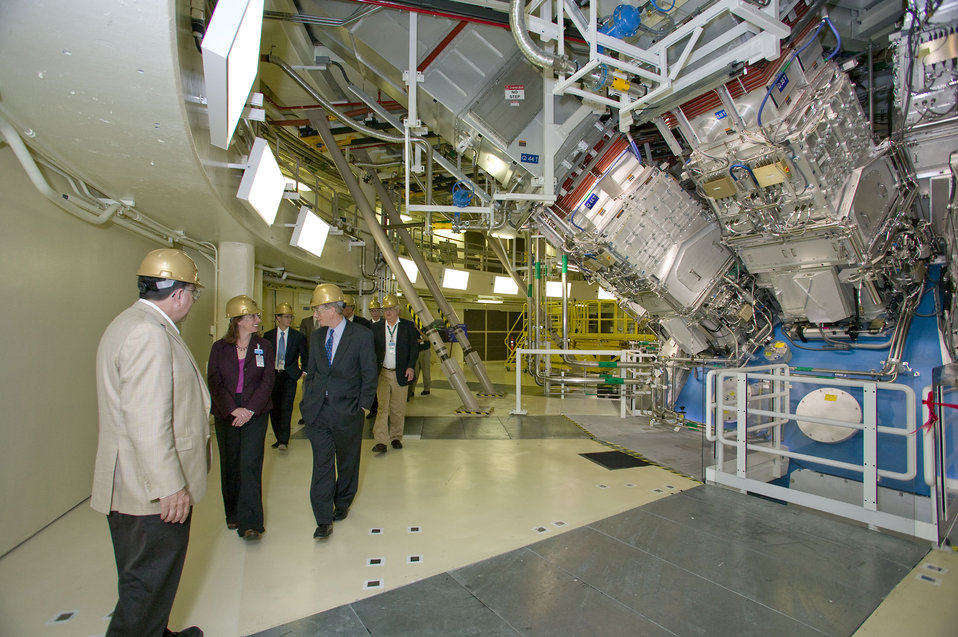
Deputy Secretary of Energy Daniel Poneman

Daniel Poneman on tour in the Target Chamber area of the NIF facility